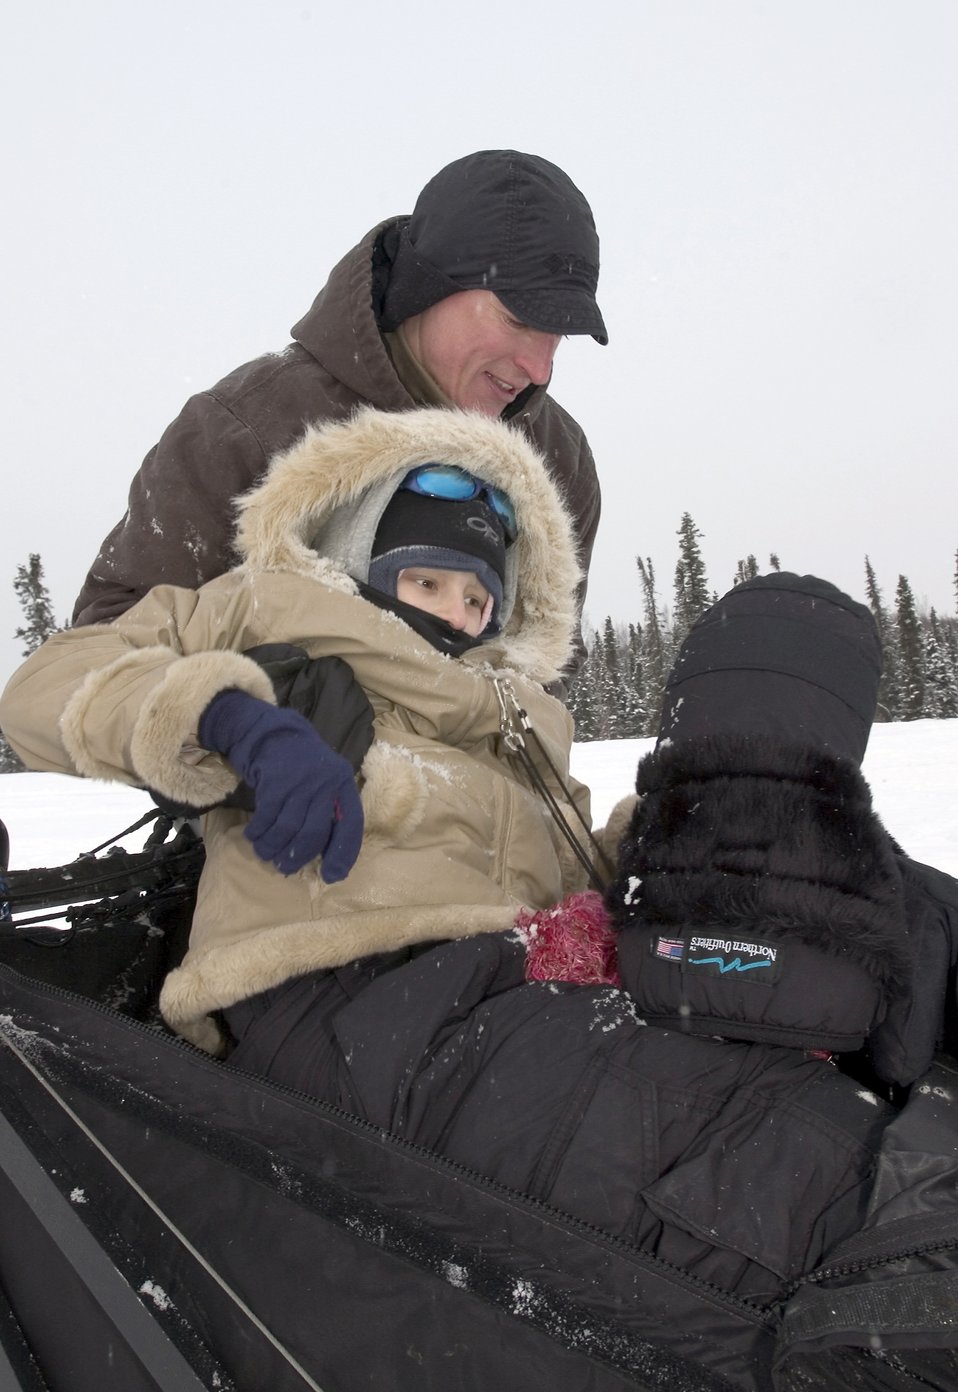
Mush!

Maj. (Dr.) Thomas Knolmayer helps 10-year-old Katie Powell out of a sled after giving her a ride with his Iditarod sled dog team. Katie is the daughter of Senior Master Sgt. Chris Powell of Travis Air Force Base, Calif., and has Ewing's Sarcoma, a rare bone cancer.